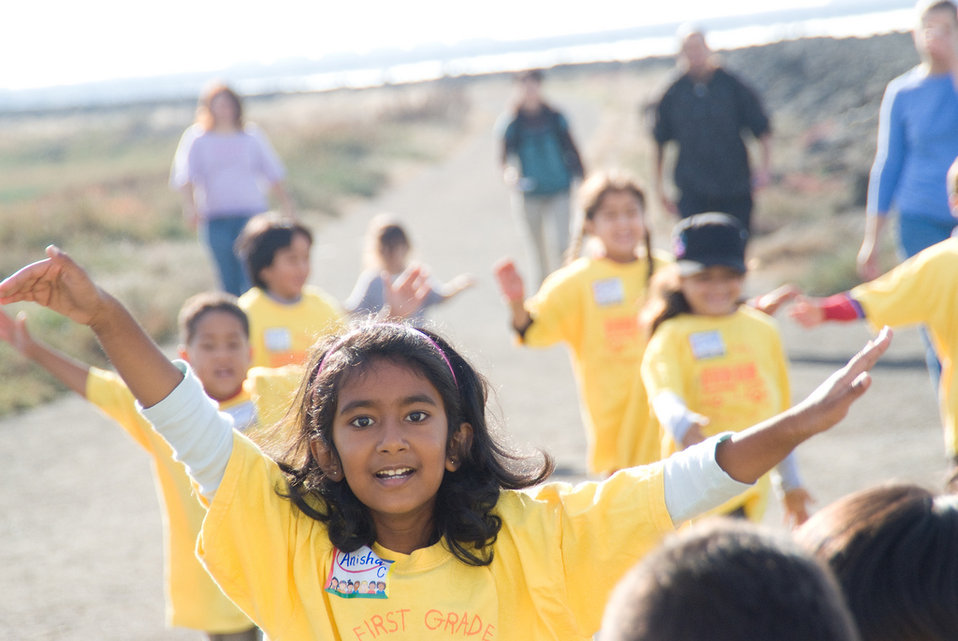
Don Edwards San Francisco Bay National Wildlife Refuge, CA

Elementary school field trip, November 2010